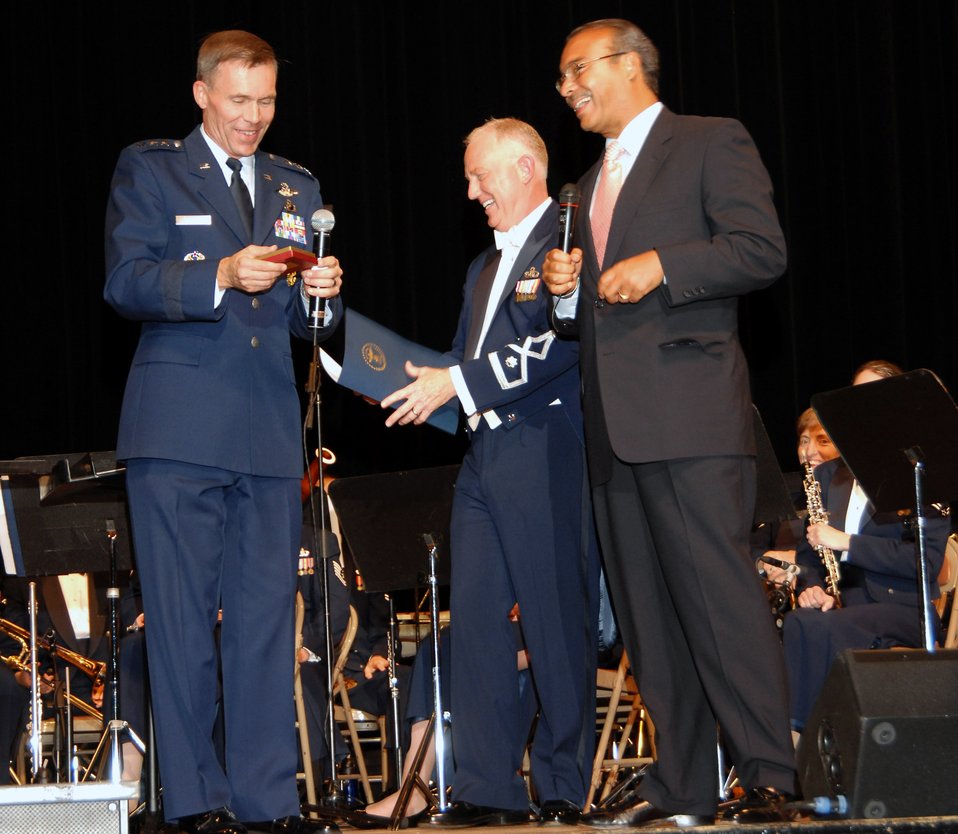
Ohio capital's mayor applauds Air Force heritage

Lt. Gen. John L. Hudson (left), commander of Aeronautical Systems Command, presents Columbus, Ohio, Mayor Michael B. Coleman with an Air Force memento during a band concert Sept. 26 in appreciation for the mayor's support to Air Force Heritage Week. Lt. Col. Alan Sierichs, commander of the U.S. Air Force Band of Flight, holds the proclamation the mayor read establishing Air Force Heritage Week in Columbus.